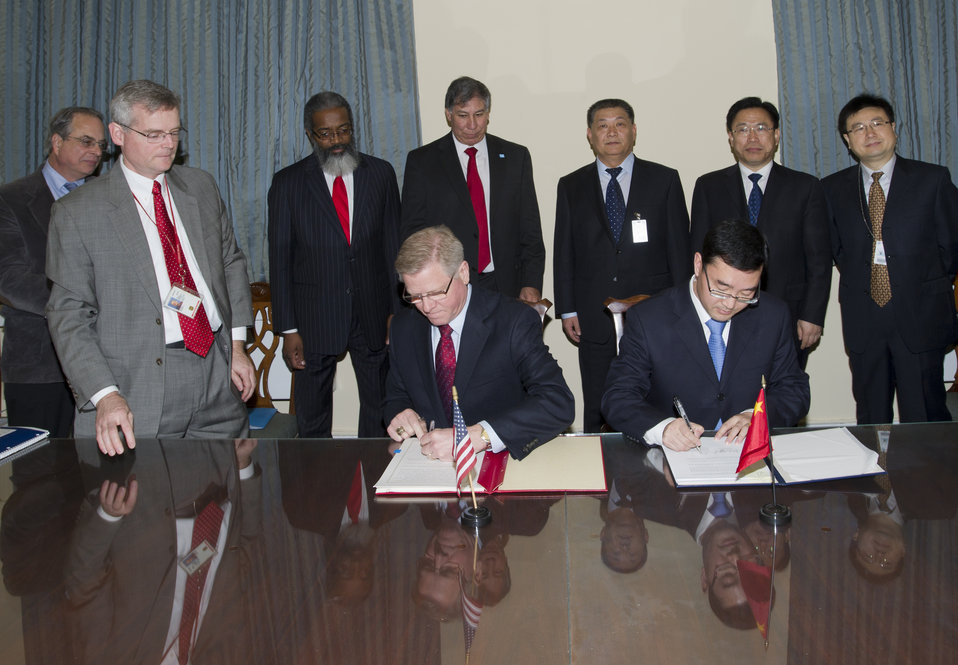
Deputy Administrator and Chief Veterinary Officer for APHIS' Veterinary Services' (VS) Dr. John Clifford (left) and Deputy Director General Department of Supervision on Animal and Plant Quarantine Administration of Quality Supervision, Inspection and Quarantine (AQSIQ) Zhao Zenglian sign a Memorandum of Understanding (MOU) on fruit packing house suspensions; and export protocol for U.S.-origin breeding chickens (including hatching eggs and day-old chicks) at the U.S. Department of Agriculture in Washington D.C. on Tuesday, Feb. 14, 2012. Standing (left to right) Director, Center for Plant Health and Science Technology Dr. Phillip Berger, Animal and Plant Health Inspection Service (APHIS) Internal Service (IS) Russell Caplen, Administrator
APHIS Greg Parham, Agriculture Under Secretary for Marketing and Regulatory Programs (MRP) Edward Avalos, General Administration of Quality Supervision, Inspection and Quarantine (AQSIQ) Vice Minister Yang Gang, AQSIQ Director General General Office Li Yuanping, Deputy Director General Department of International Cooperation AQSIQ Zhang Baofeng.